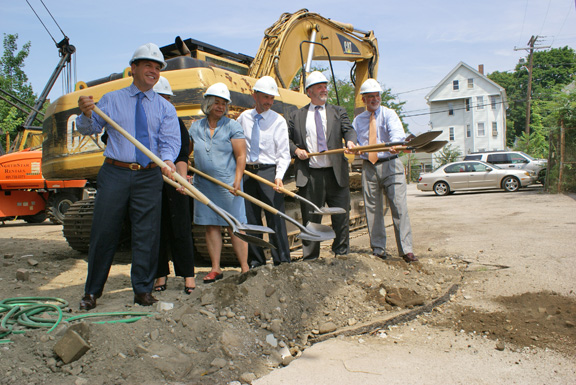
RI Ground Breaking 6/28/10

Providence Mayor David Cicilline, Chairwoman, of the Housing Resource Commission Jeanne Cola, Executive Director of OpenDoors Sol Rodriguez, Assistant Secretary Dan Tangherlini, Director of Rhode Island Department of Corrections A.T. Wall, and Executive Director of Rhode Island Housing Richard Godfrey officially kicking off construction.